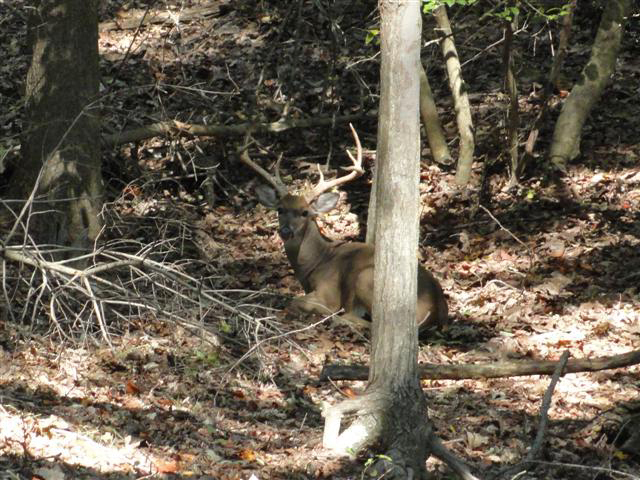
White-tailed deer

Mason Neck National Wildlife Refuge, VA.